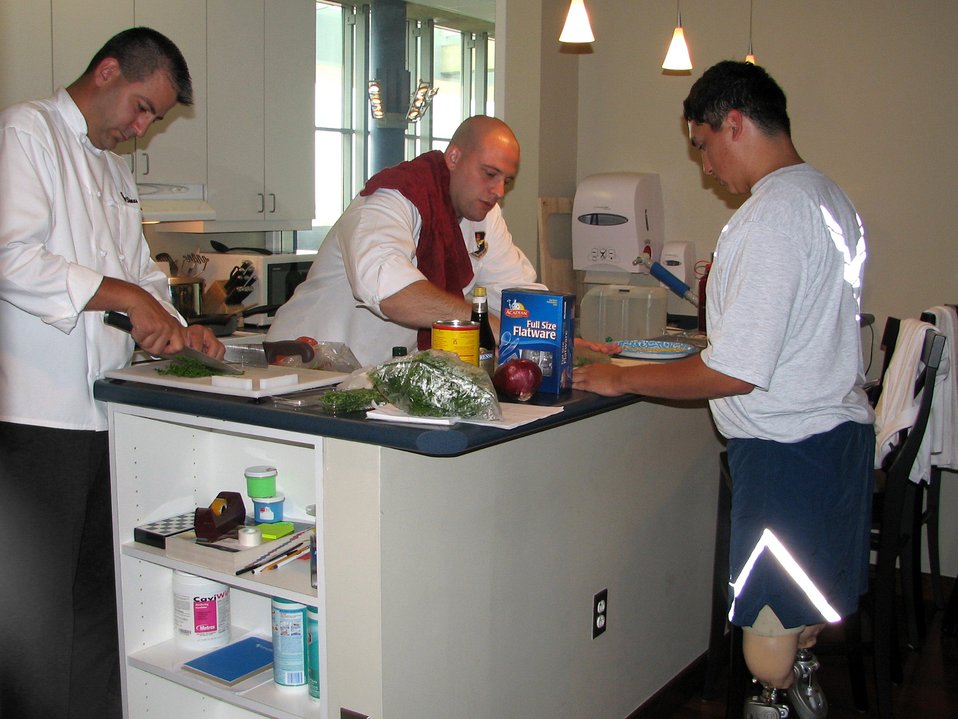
Airmen bring joy through cooking at Center for the Intrepid

Tech. Sgt. Jason Simas and Staff Sgt. Michael Leo prepare a meal for Airmen at the Center for the Intrepid June 24 in San Antonio. Airman 1st Class Kevin Krogh assists in the preperation. The sergeants are enlisted aides to the Air Education and Training Command commander and vice commander. They volunteered their culinary talents to support sevicemembers in treatment at the center.